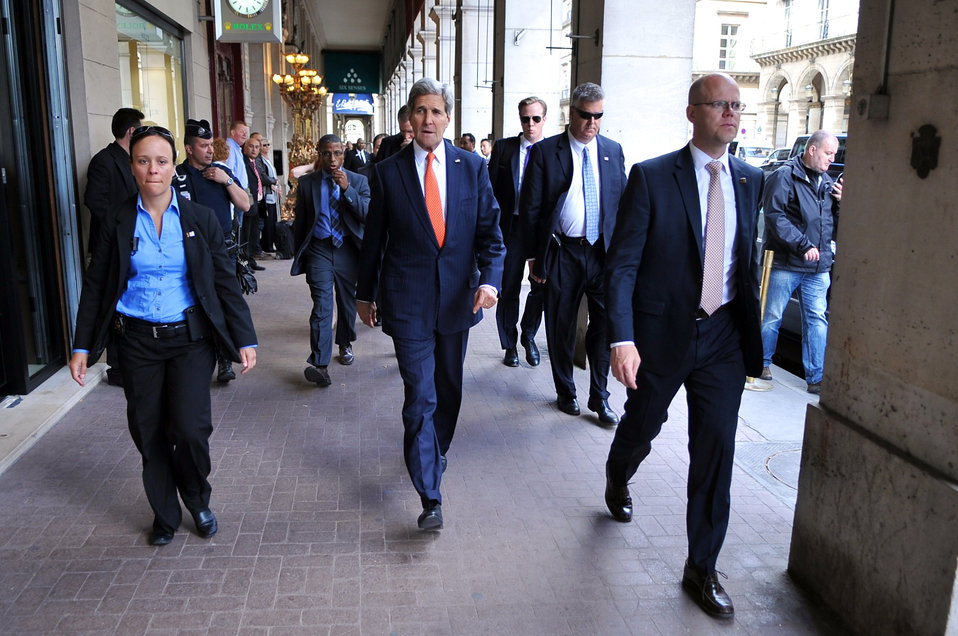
Secretary Kerry Takes Walk Through Streets of Paris Between Meetings

U.S. Secretary of State John Kerry walks down a street in Paris during a break between meetings in the French capital on June 5, 2014.